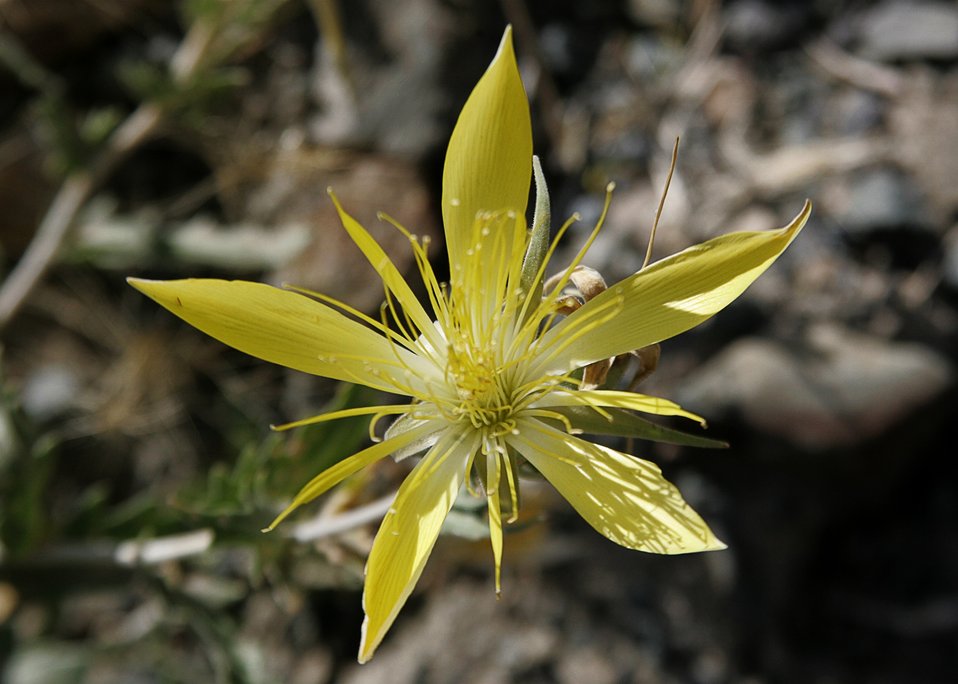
Mentzelia, one of the blazing stars.